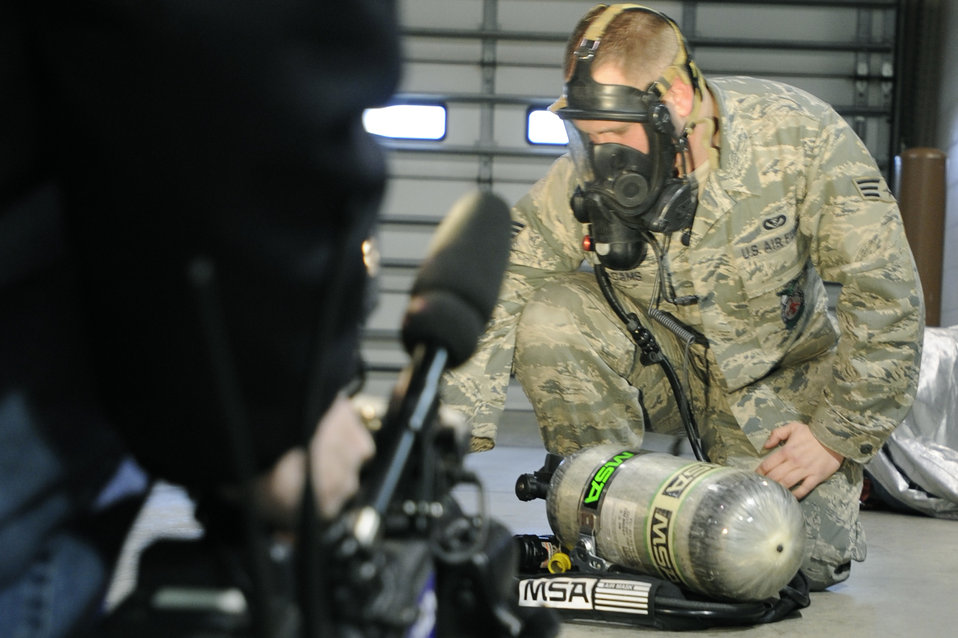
Firefighter saves couple

Senior Airman Jared Adams demonstrates a self-contained breathing apparatus to reporters from KWCH-TV, a Wichita, Kan., television station Jan. 31, 2011, at McConnell Air Force Base, Kan. Airman Adams is a firefighter assigned to the 22nd Civil Engineer Squadron. He was recognized by KWCH-TV reporters for rescuing a couple from a house fire.